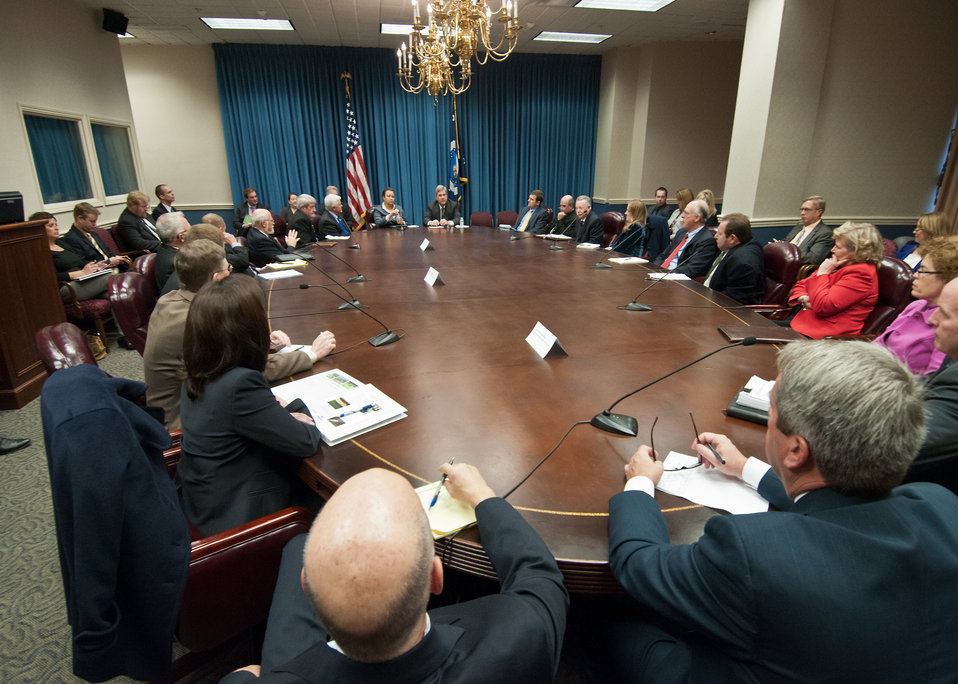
Agriculture Secretary Tom Vilsack and Lisa Jackson, Administrator, Environmental Protection Agency and commodity groups representing all aspects of agriculture met at the United States Department in Washington, D.C., of Agriculture to discuss mutual agricultural and environmental issues on Tuesday, December 14, 2011.